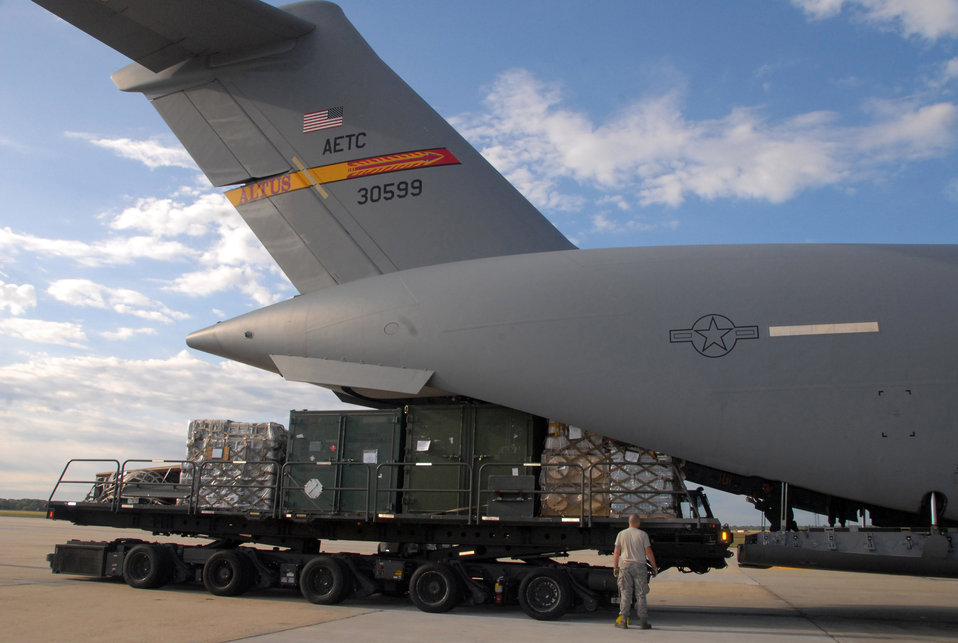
Altus crews help prepare for Hurricane Ike

An Airman helps load a C-17 Globemaster III Sept. 10 at Kelly Field, Texas. The C-17 was flown by a crew assigned to the 58th Airlift Squadron from Altus Air Force Base, Okla. The cargo uploaded belongs to the 617th Contingency Response Group, McGuire AFB, N.J. The supplies will be used for emergency response and contingencies related to Hurricane Ike, and were flown to Harlingen, Texas.